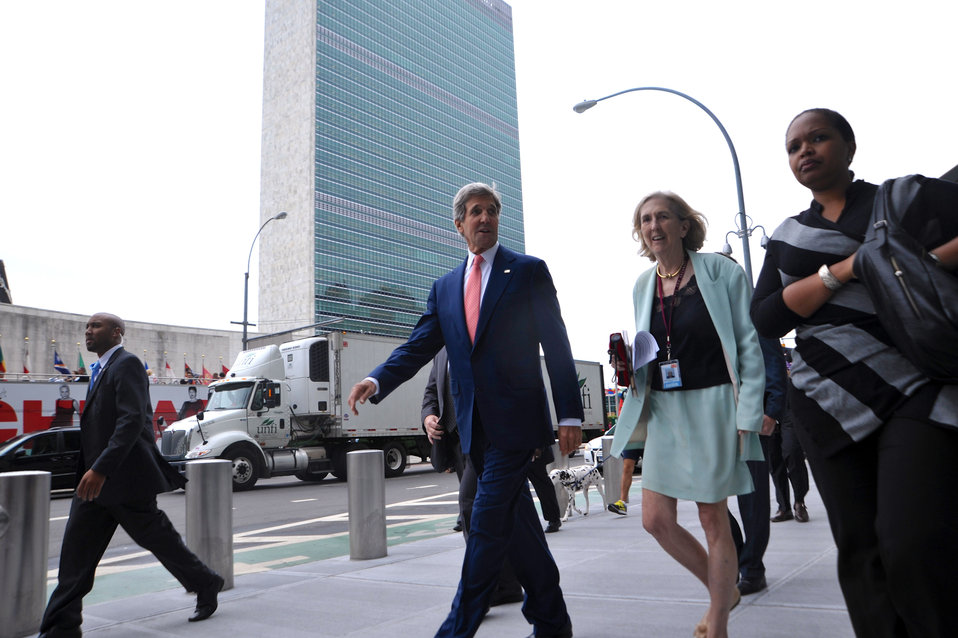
Secretary Kerry and His Sister Peggy Walk to the U.S. Mission to the UN

U.S. Secretary of State John Kerry, accompanied by his sister Peggy, walks past the United Nations Headquarters building en route to the U.S. Mission to the UN in New York City on July 25, 2013.